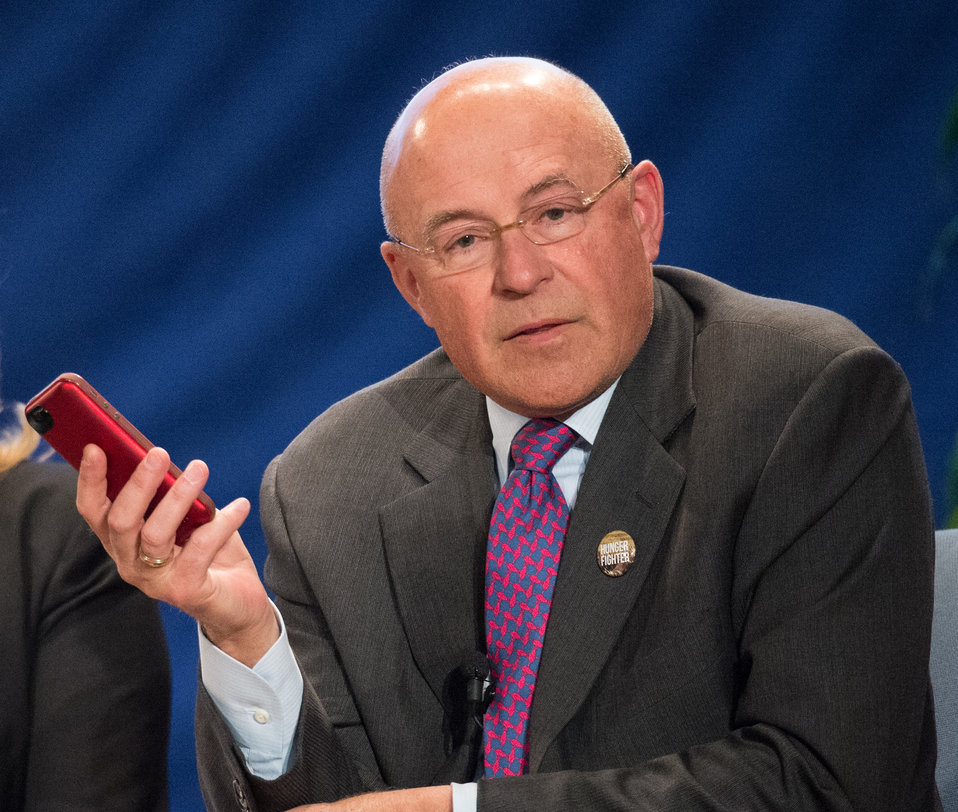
Monsanto Chief Technology Officer Robb Farley talks about mobile communication and it's relationship to agriculture, at the Borlaug Symposium commemorating the late Dr. Norman E. Borlaug's 100th Birthday hosted by the U.S. Department of Agriculture (USDA) in the Jefferson Auditorium of USDA in Washington, D.C. on Tuesday, Mar. 25, 2014. The symposium will highlight current efforts addressing global hunger. The symposium panels will feature high school and university students, as well as, scientists and policy advisors at U.S. Agency for International Development (USAID), USDA and Non-Governmental Organizations (NGO). Questions from students and interns are given priority to panelists. Lightening presentations will have leading students and individuals present what they are doing to help achieve Dr. Borlaug’s vision of creating the next generation of hunger fighters. The symposium was planned in partnership with: U.S. Agency for International Development, Cornell University, Iowa State University, University of Minnesota, The Norman Borlaug Institute for International Agriculture, Texas A and M University, and the World Food Prize.